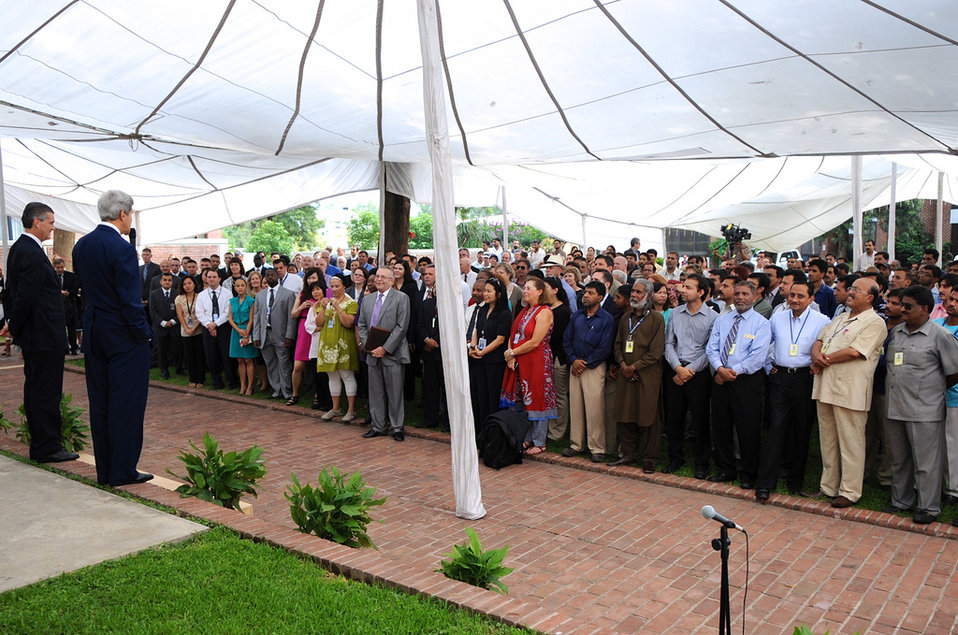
Secretary Kerry and Ambassador Olson Greet Embassy Islamabad Staff

U.S. Secretary of State John Kerry and U.S. Ambassador to Pakistan Richard Olson greet staffers at the U.S. Embassy in Islamabad, Pakistan, on August 1, 2013.